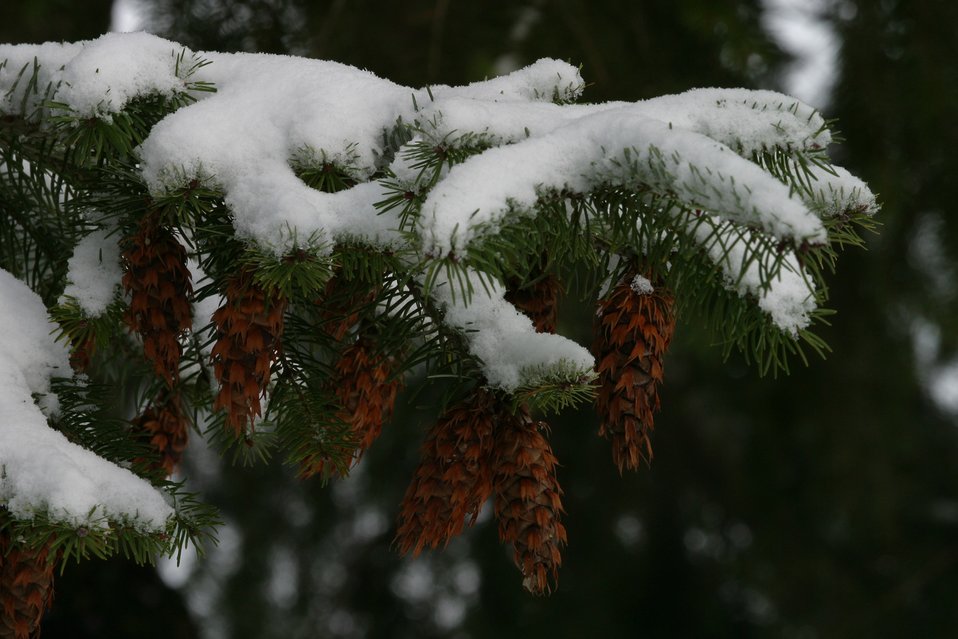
Snow and ice on Douglas Fir Bows and cones during the storm of January 2004.